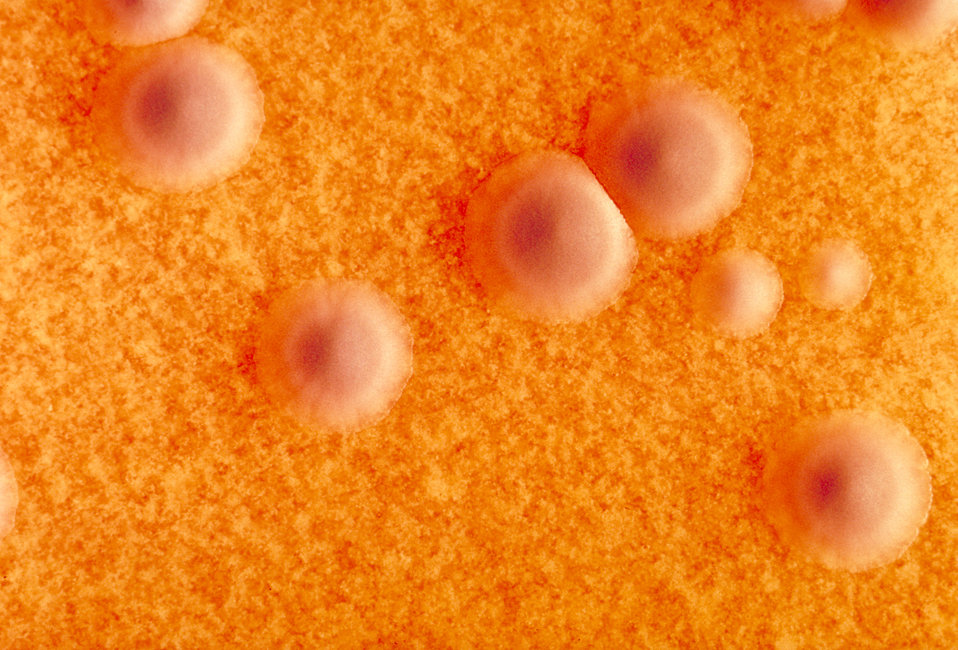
Cystine tellurite plate culture of Corynebacterium diphtheriae, displaying the gravis biotype colonial growth pattern.